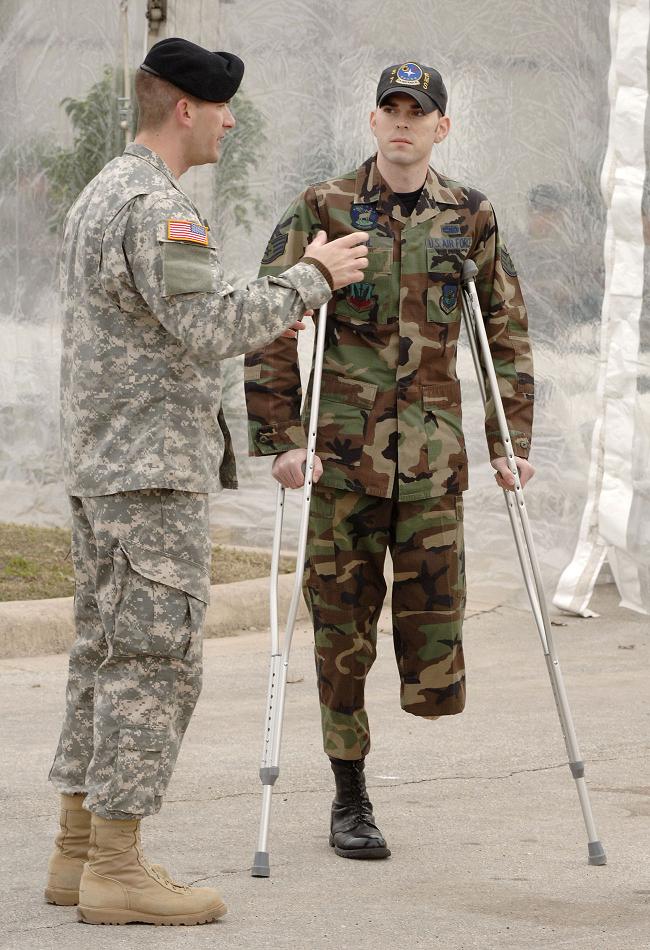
Center for Intrepid

Staff Sgt. Justin Beil is escorted by Army Capt. Brian Freideline from Brooke Army Medical Center before the ceremony to open the Center for the Intrepid, a rehabilitation center for amputees and burn victims. Sergeant Beil is assigned to the 59th Medical Wing at Lackland Air Force Base, Texas, and will use the new facility on an out-patient basis.